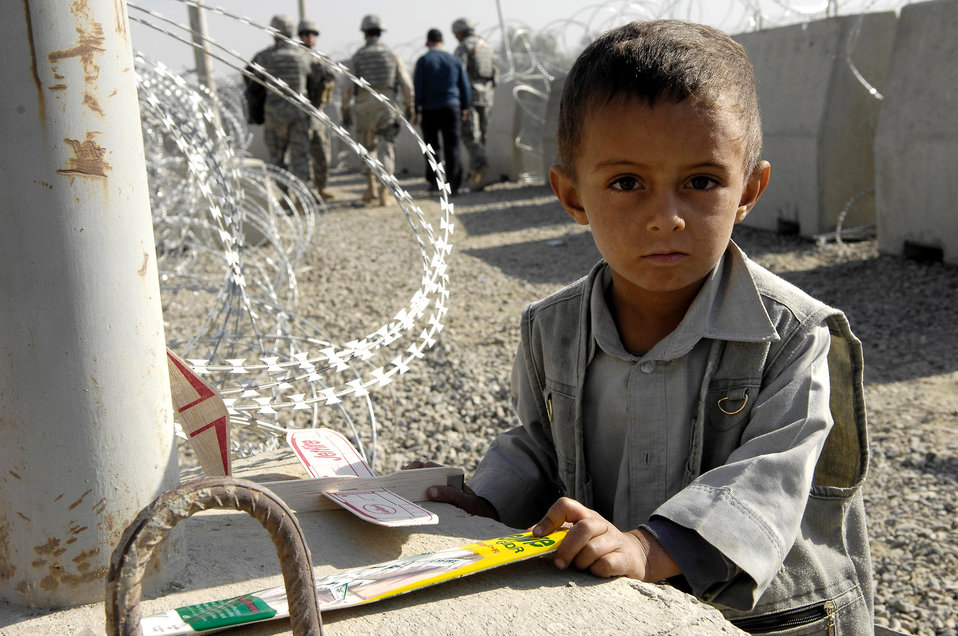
Kabul Airman brings gifts, smiles to local children

A young Afghan boy waits outside the entry control point of Kabul International Airport, Oct 22, after receiving a toy plane from a group of Air Force members. The toy planes were given out along with soccer equipment to a group of local children from the Kabul Youth Soccer League . The equipment was donated from businessmen and supporters from Tennessee, Georgia and California.